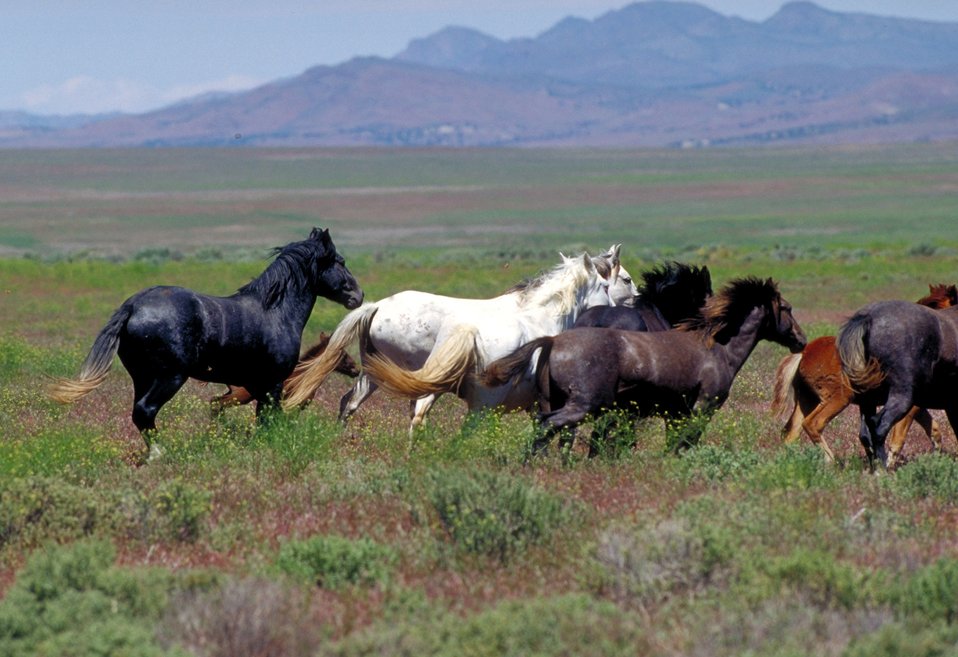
Onaqui Herd near Dugway, Utah.